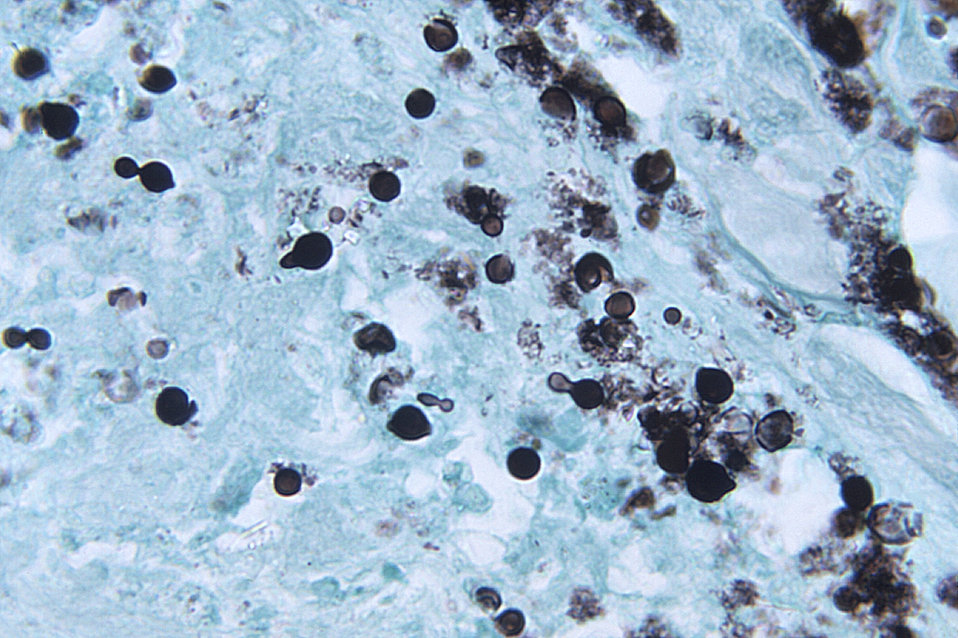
Under a magnification of 500X, this Gomori-stained photomicrograph of a primate tissue sample, revealed some of the histopathologic cytoarchitectural changes associated with what was determined to be a case of lobomycosis due to the fungus, Lacazia loboi, formerly known as Loboa loboi.